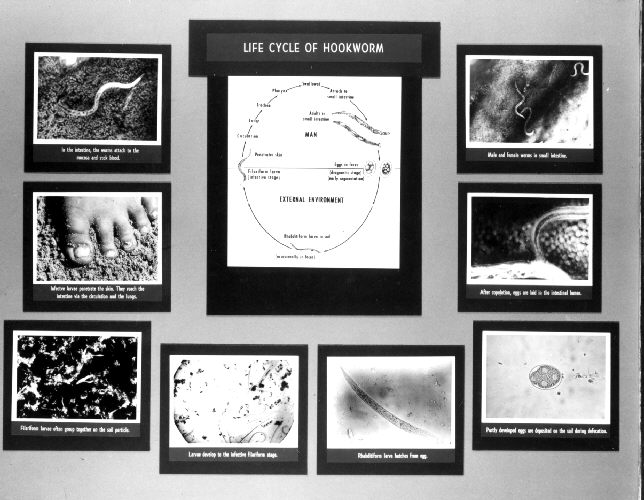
Display showing the life cycle of a hookworm.